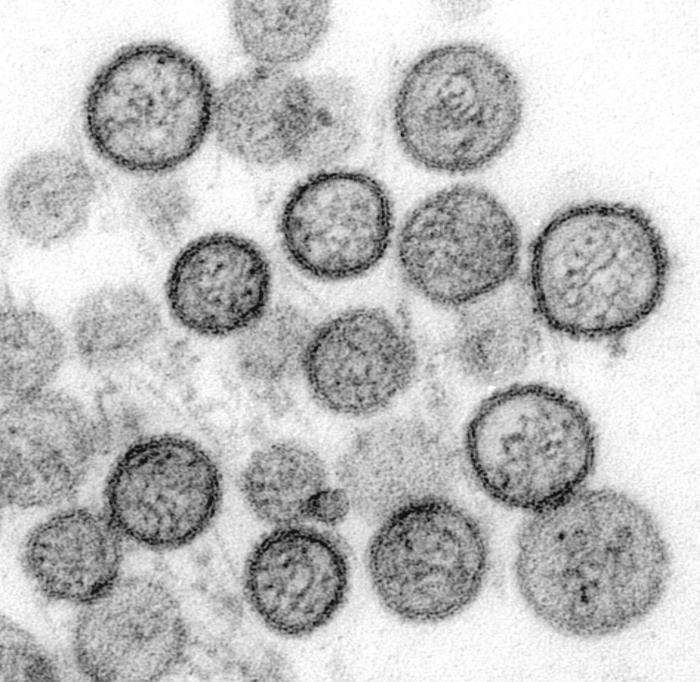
Transmission electron micrograph of Sin Nombre virus.